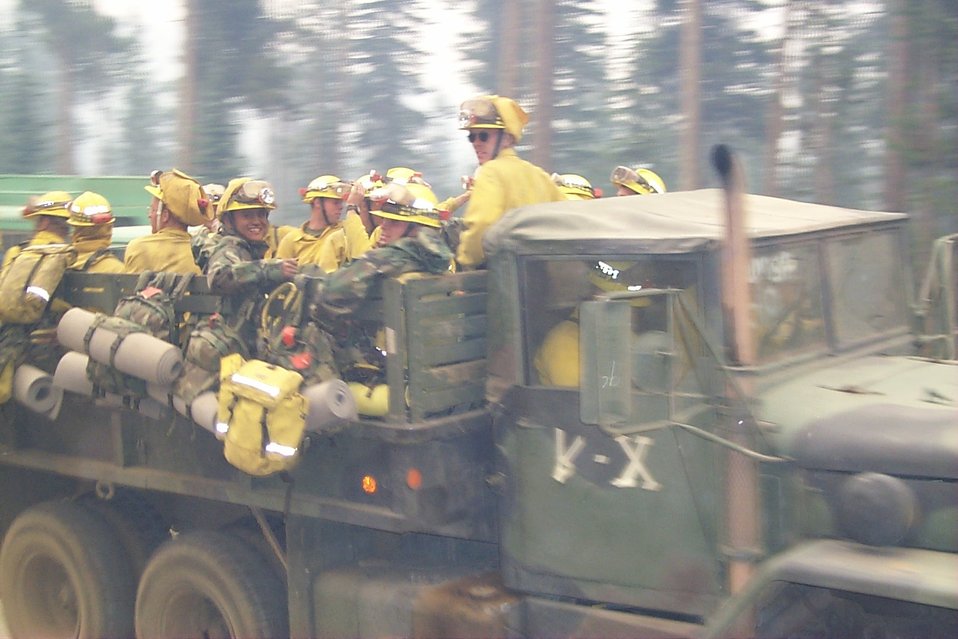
Fire fighters transport Fire Clearwater Fire Salmon Field Office USRD Upper Snake River District